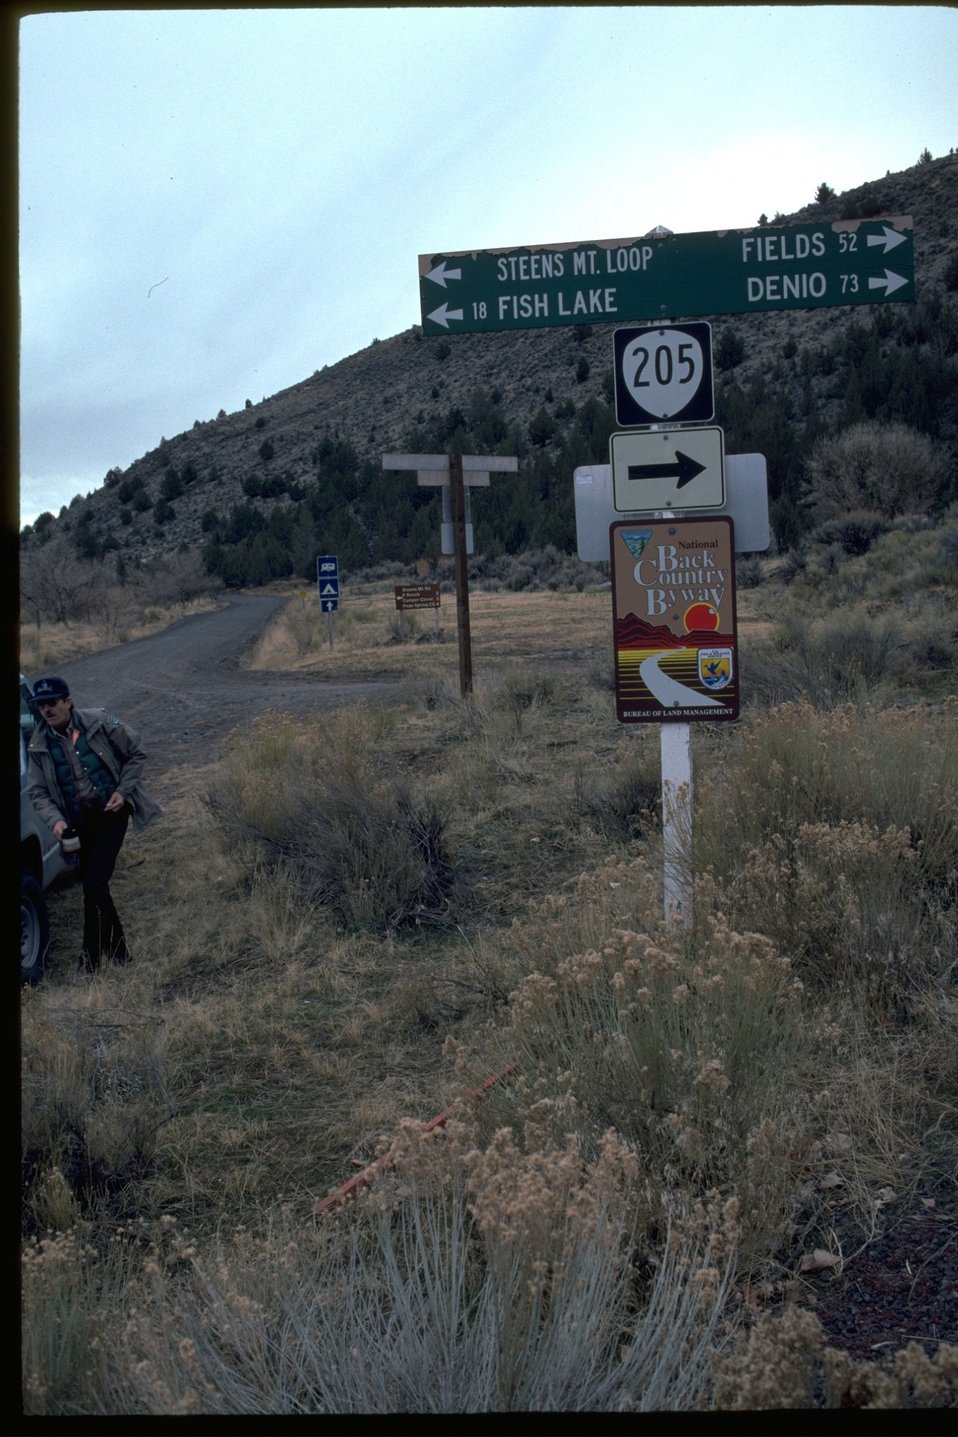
Byway direction signs.